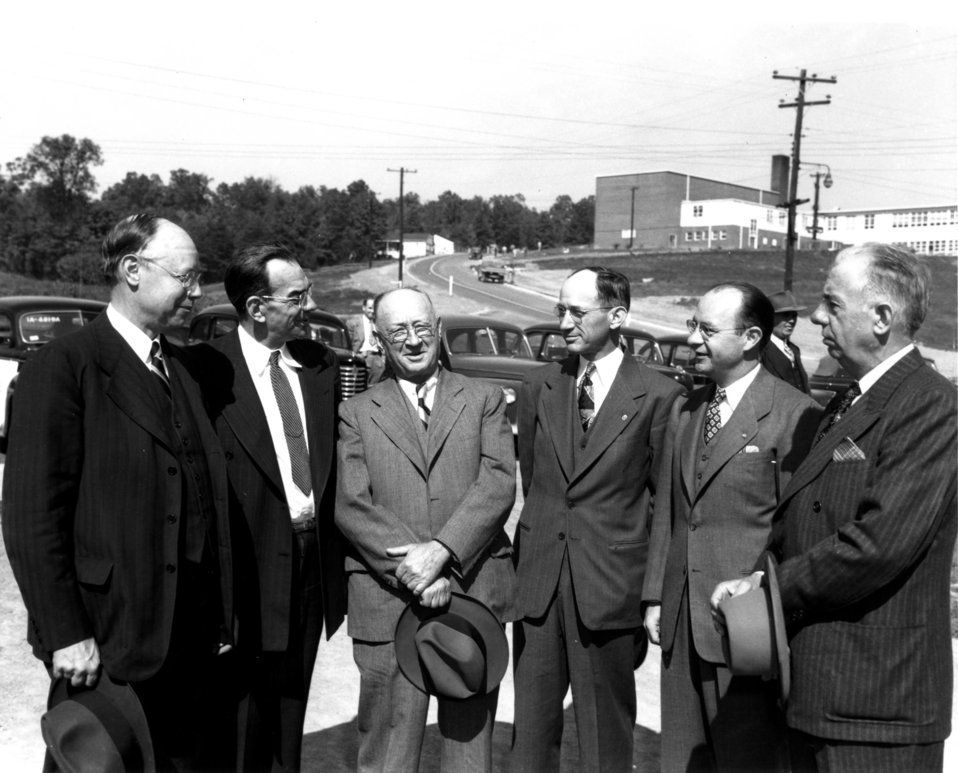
Notable persons at Oak Ridge